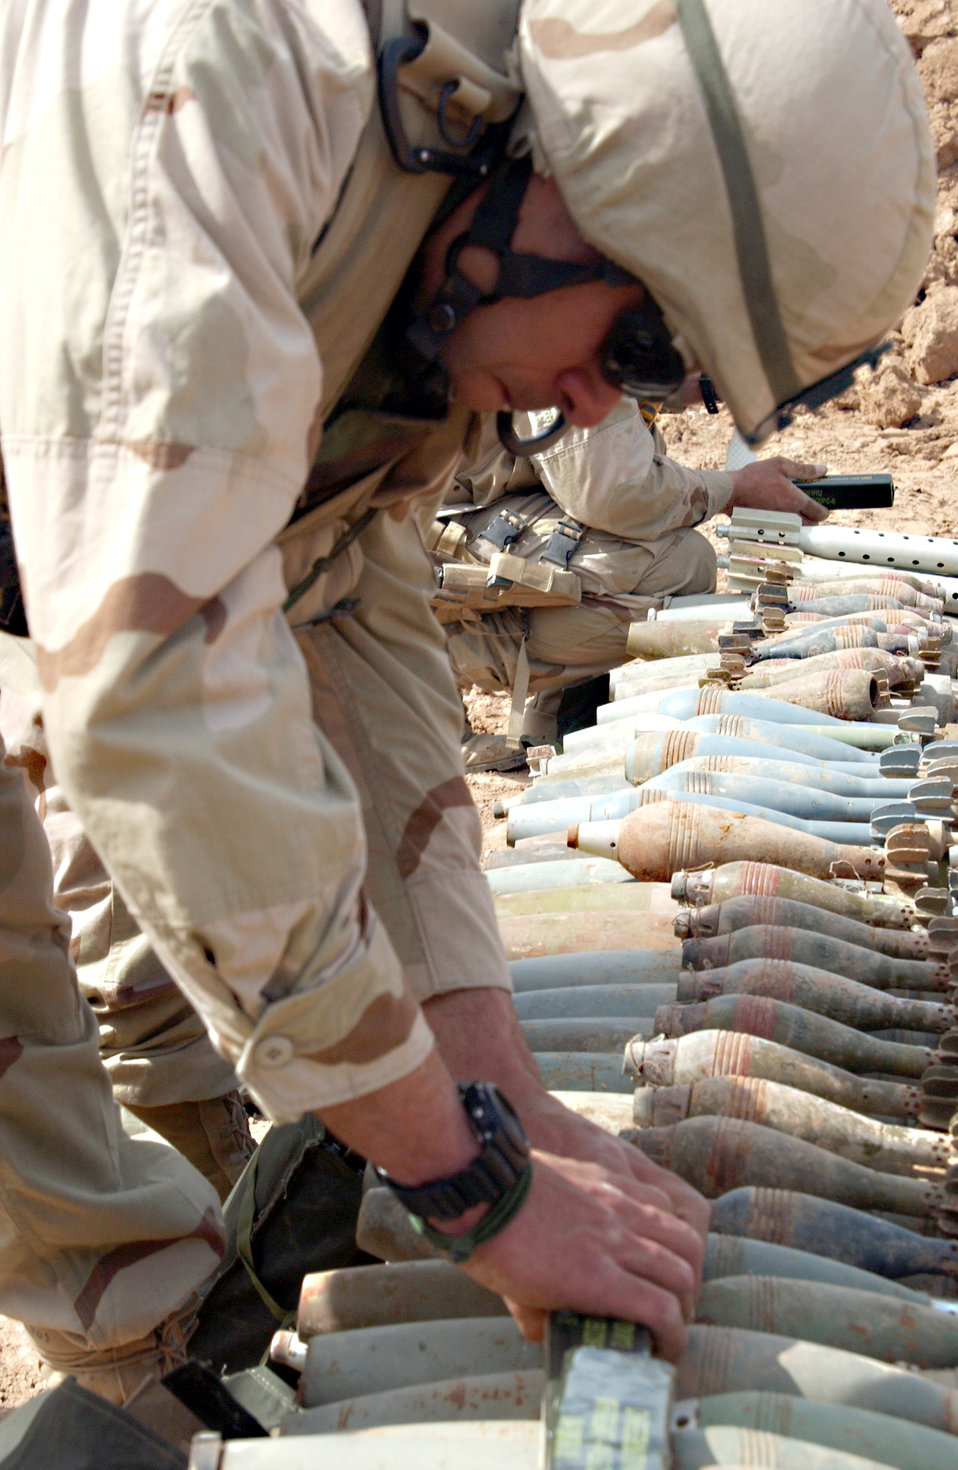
C-4 classified

KATAN ALKABER, Iraq -- Senior Airman James Hodge (front) and Airman 1st Class Glenn Henthorn put C-4 explosives on 100 mm armor-piercing rounds during an ammunition cache demolition here April 7. Airman Hodge is a member of 506th Expeditionary Civil Engineer Squadron and Airman Henthorn is a member of 380th ECES. Squadron workers destroy ammunition disposals to prevent anti-coalition forces from using them for criminal and terroists acts in Iraq.